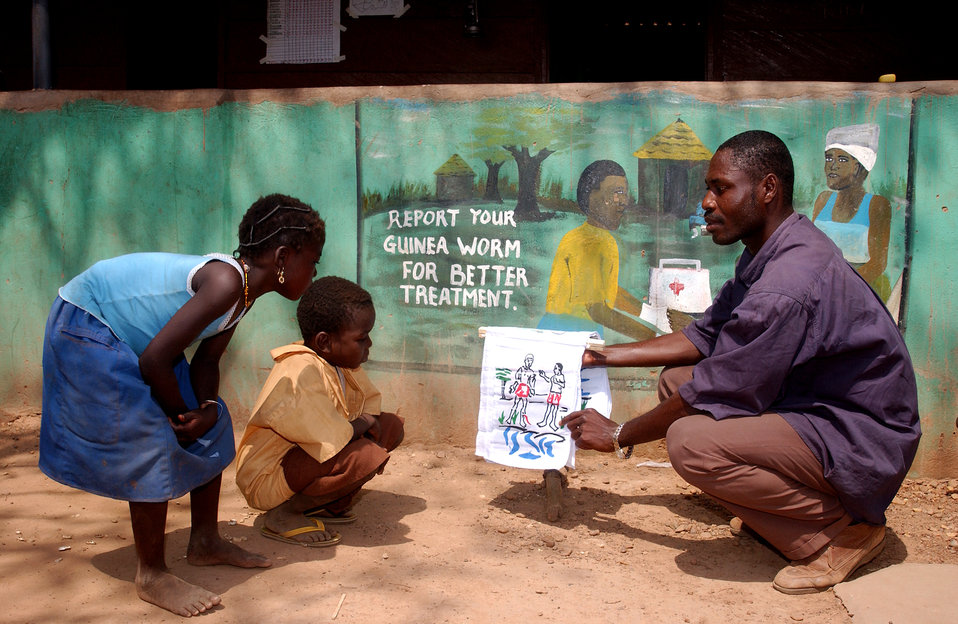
This image depicts a Ghanaian boy and girl being taught to avoid contracting Guinea worm disease (GWD), or Dracunculiasis, by a volunteer. The instructor uses illustrations drawn on cloth depicting Guinea worm disease, its symptoms, and the methods one must practice in order to avoid infection. The drawing in this image shows two people discussing what the infected man must do to treat his Guinea worm infection, as they stand on the banks of a contaminated pond.Symptoms of GWD usually do not appear until about one year after infection. A few days, to just hours before the worm emerges, the person may develop a fever, swelling, and pain in the area. Often worms appear on the legs and feet, but may occur anywhere on the body. Almost invariably the skin lesions caused by the worm develop secondary bacterial infections, increasing the pain, and extending the period of incapacitation to months, which can cause disabling complications, such as locked joints and even permanent crippling.